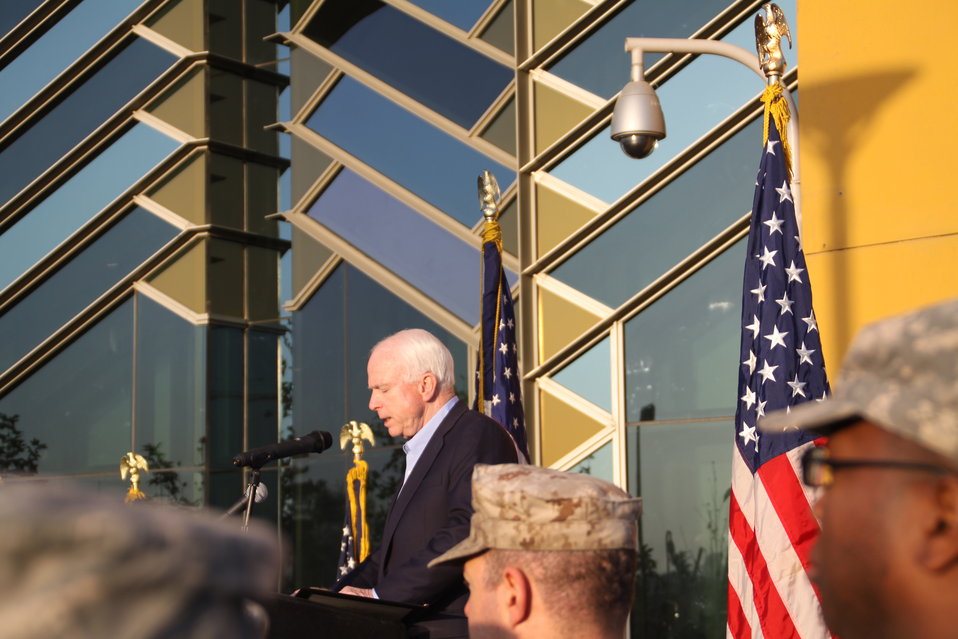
Senator McCain